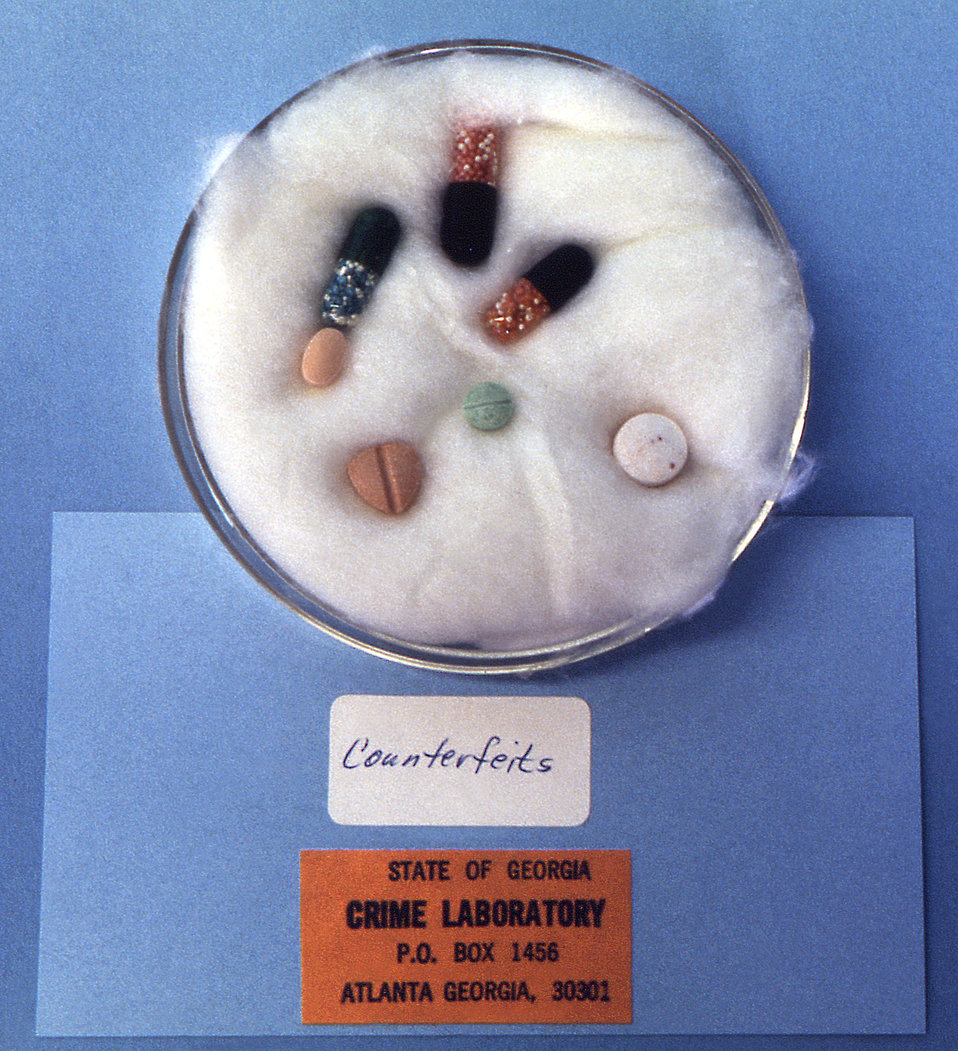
Lined with cotton, this culture plate contains an assortment of 'counterfeit' amphetamines, which had been confiscated during the control of criminal activities in and around the city of Atlanta, Georgia during 1973.